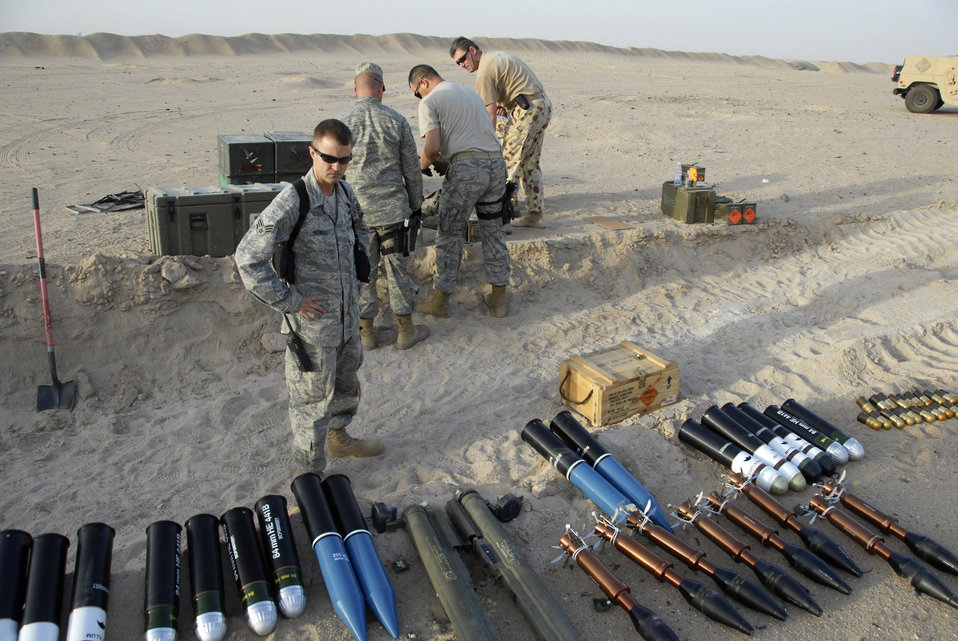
Americans, Australians go out with a bang

Senior Airman Charles Howell (front center) looks over the munitions that are about to be destroyed while other Airmen and Australian army ammunition technicians prepare light anti-armor weapon rockets for disposal prior to a controlled detonation June 20 at an explosive ordnance disposal range in Southwest Asia. The joint detonation also provided an opportunity for the U.S. and coalition forces to enhance their relations while learning some of the slight differences in operating procedures. Airman Howell is assigned to the 386th Expeditionary Civil Engineer Squadron Explosive Ordnance Disposal Flight.